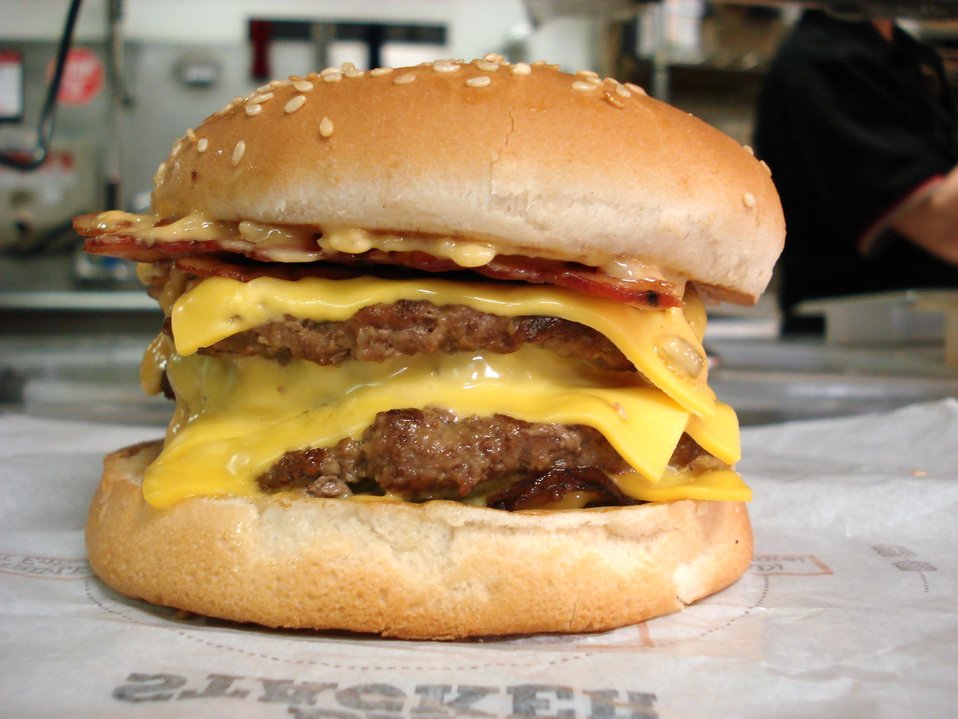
This is what the Quad Stacker from Burger King looks like before it is wrapped up to give to the customer. It gets 4 jr. meat patties, 4 slices of cheese, 8 pieces of bacon, and a special sauce that resembles 1,000 Island Dressing.